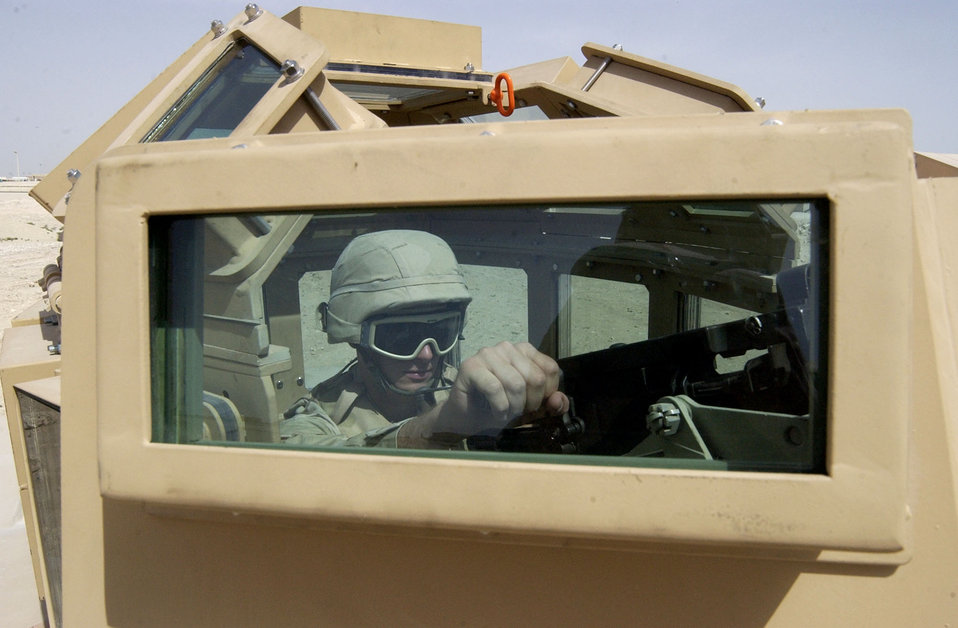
Life-saving turret prototype stems from Airman's death

An Airman tests an improved protective turret prototype during field assessments in Southwest Asia. The turret was developed by the USCENTAF force protection staff in concert with the Air Force Security Forces Force Protection Battlelab. The prototype's development and testing, in less than 80 days, stemmed from the death of Airman 1st Class Leebernard Chavis, who was killed by sniper fire in October 2006.